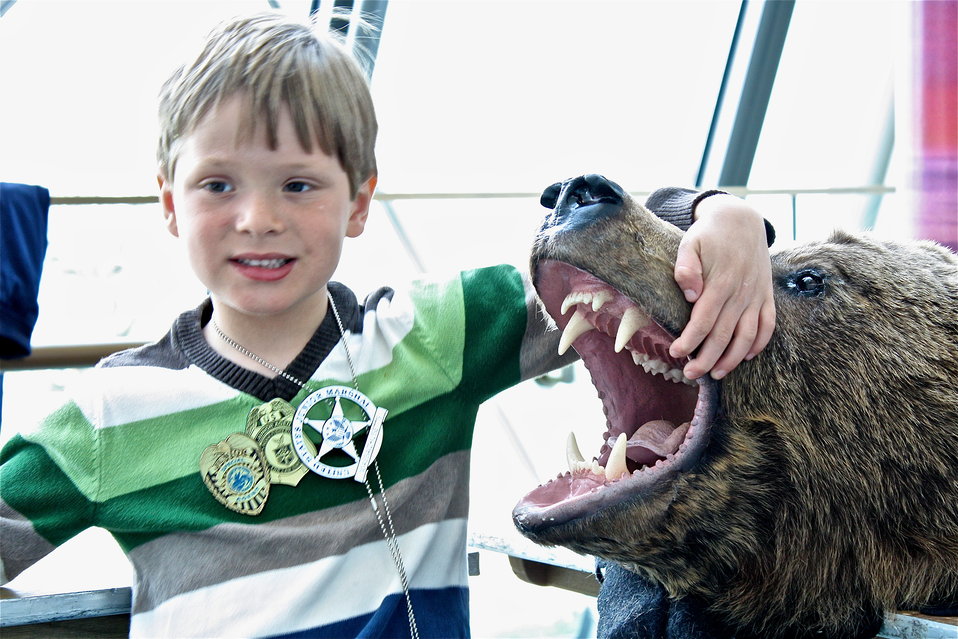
As close as you'll ever want to get...